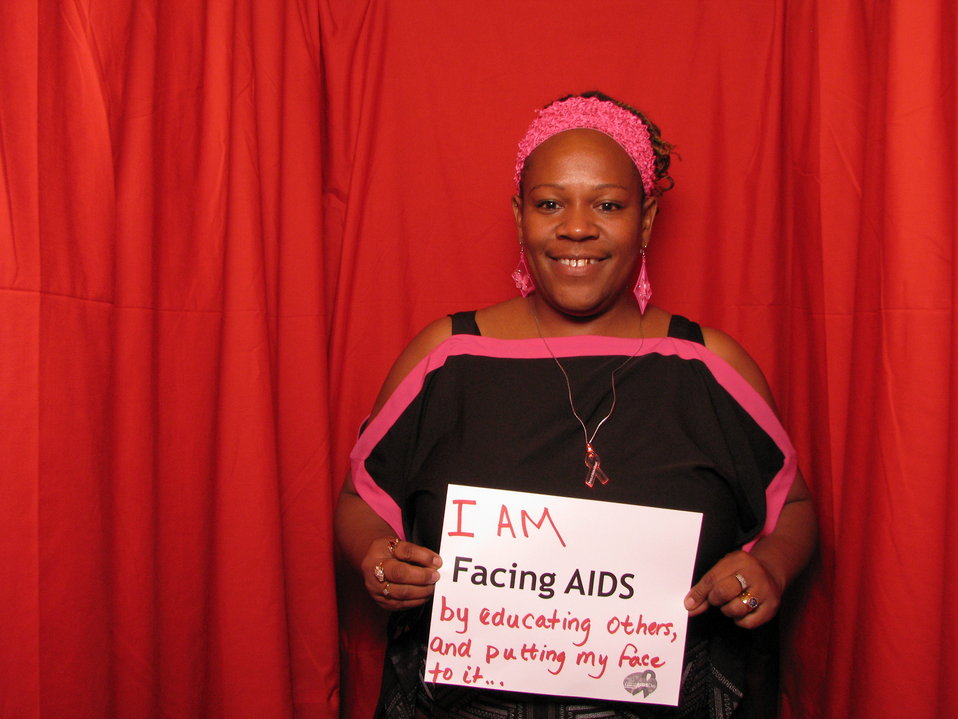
I AM FACING AIDS by educating others, and putting my face to it...

From the AIDS.gov photo booth at the U.S. Conference on AIDS, September 2010 (Orlando, FL).